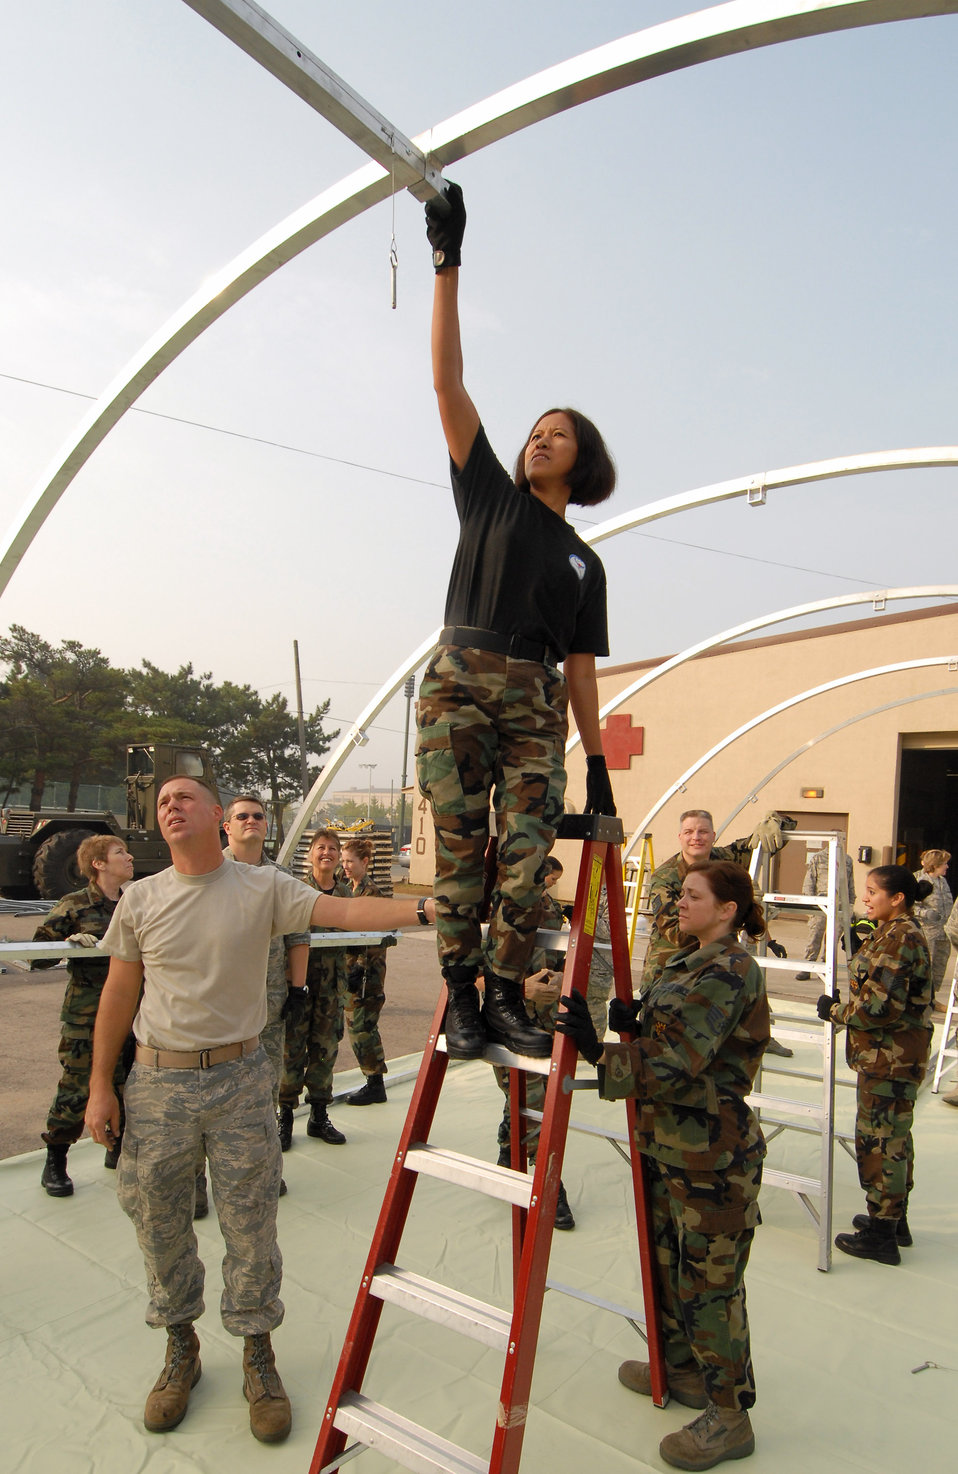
Reserve medics train at Kunsan

Senior Master Sgt. Delores Rivera helps construct a medical staging facility Oct. 21 at Kunsan Air Base, South Korea. Sergeant Rivera is a 56th Medical Group reservist from Luke Air Force Base, Ariz.